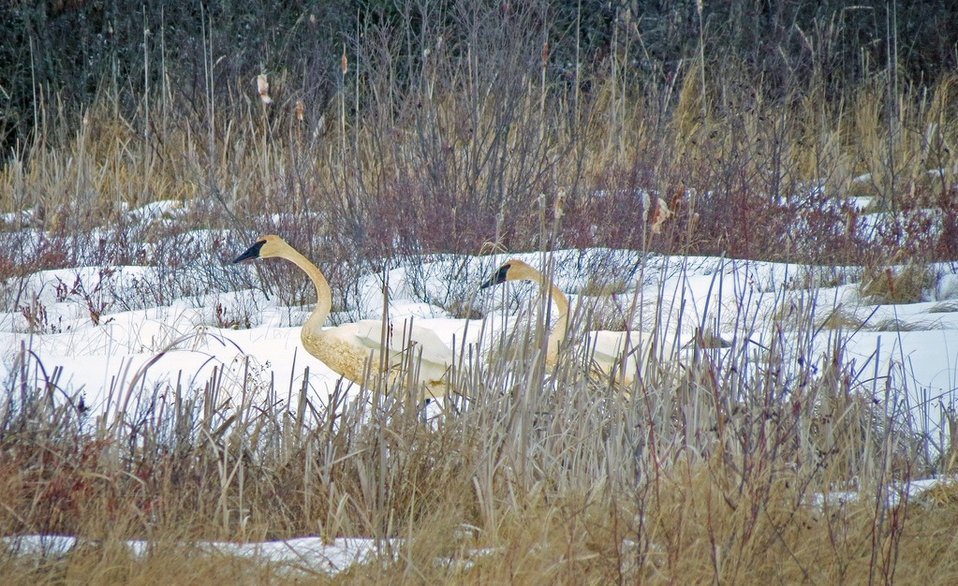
trumpeter swans in the snow ....

...at Seney National Wildlife Refuge in MI. The birds seem to have returned earlier than usual from their wintering grounds. This photo was taken Feb. 22, 2012.